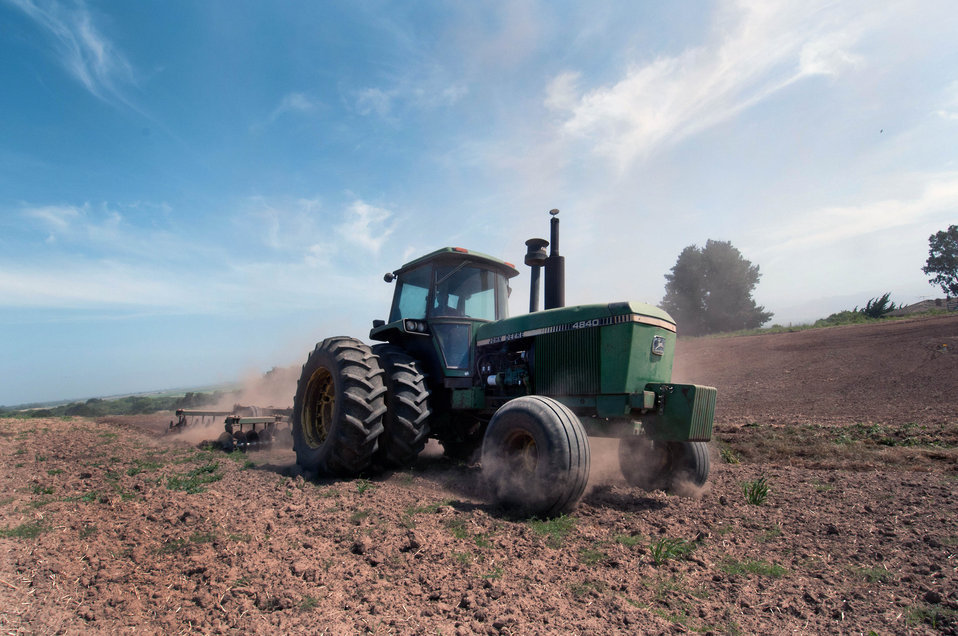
A tractor turns the cover crop into the soil in preparation for planting at Leafy Greens, in the Salinas Valley of California on Thursday, June 16, 2011. Leafy Greens grows row crops of lettuce, broccoli, cauliflower sweet peas and seed beans. He uses rotational crop plantings to control weeds and plant disease. When a plot of land is at rest, he plants a cover crop of barley and rye grass because the roots hold the topsoil reducing erosion of the soil. He is converting his irrigation system from conventional sprinklers to micro irrigation. The conventional irrigation system produces runoff and erosion of the soil while the micro irrigation system has little or no erosion, less maintenance, an easier harvest and less water is needed. When seasonal rains produce runoff, the silt that flows with it is caught in sediment ponds. The ponds have grass, bushes and trees to hold the structure and allow the silt to settle. Spillways lead to holding ponds and eventually the Salinas River, a tributary of the Monterey Bay National Marine Sanctuary. To date, because of its design and efficiency, no water has made it to the river.